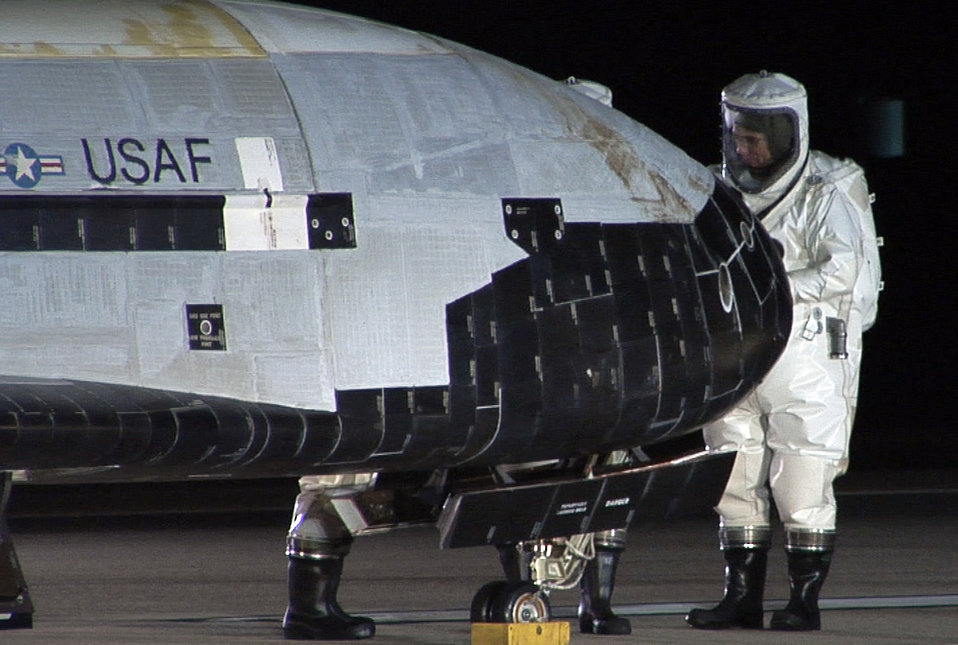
X-37B Orbital Test Vehicle 1

Technicians in self-contained atmospheric protective ensemble suits conduct initial checks on the X-37B Orbital Test Vehicle 1) after its landing Dec. 3, 2010, at Vandenberg Air Force Base, Calif. This is the Air Force's first unmanned re-entry spacecraft.